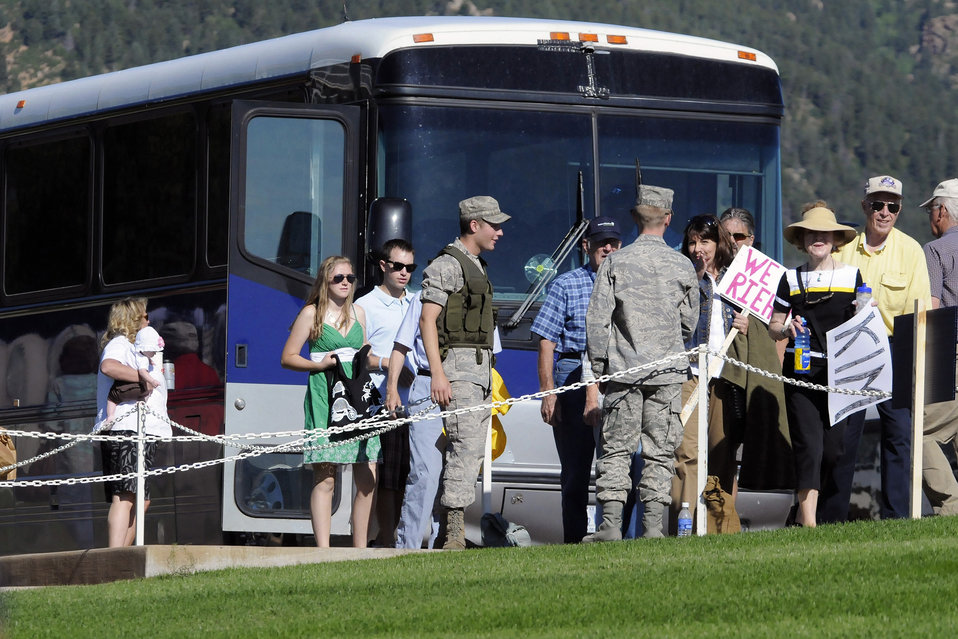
Acceptance Parade

USAF ACADEMY, CO-- Friends and family arrive to observe the Academy's Class of 2013 march onto Stillman Field during the Acceptance Parade, Wednesday . The parade marks the official end of Basic Cadet Training and formally welcomes the new class into the cadet wing.